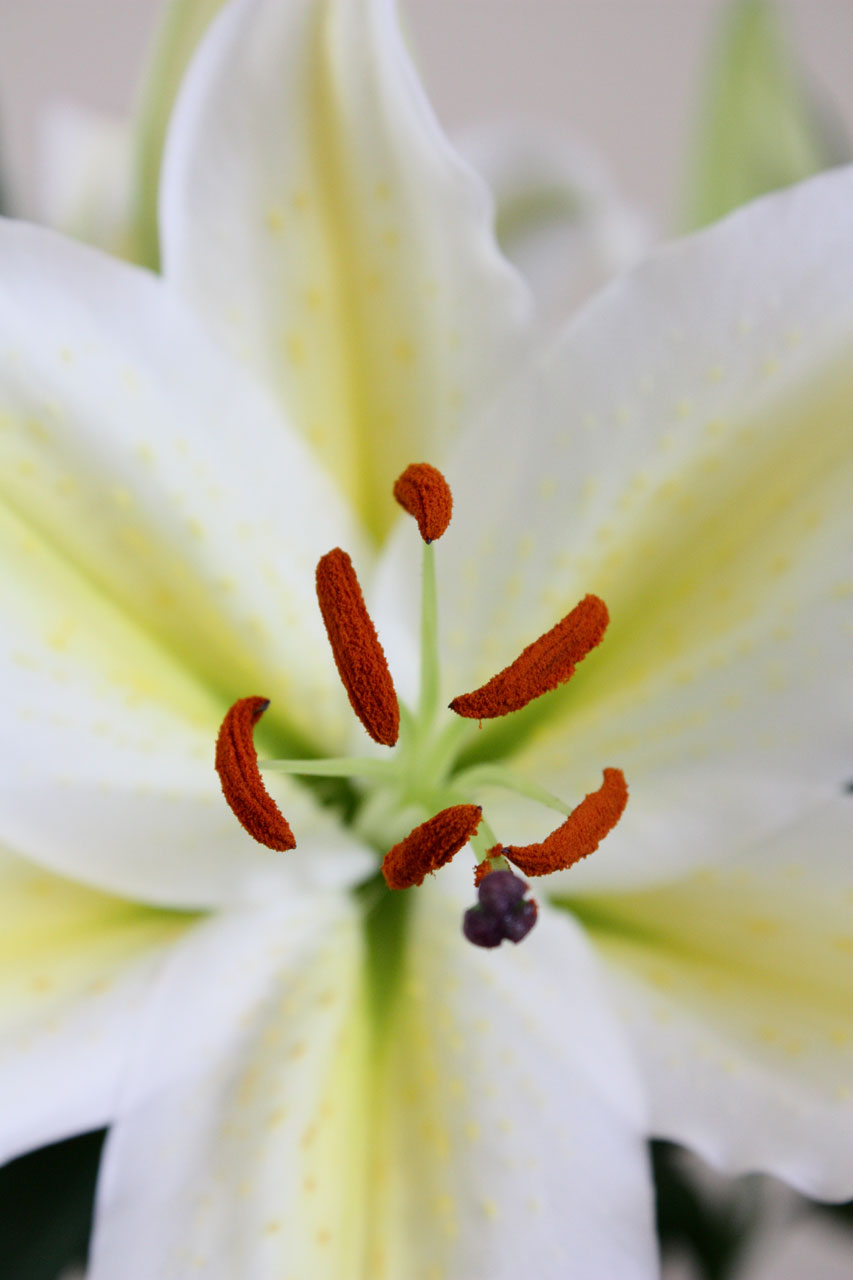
Lily

White lily.